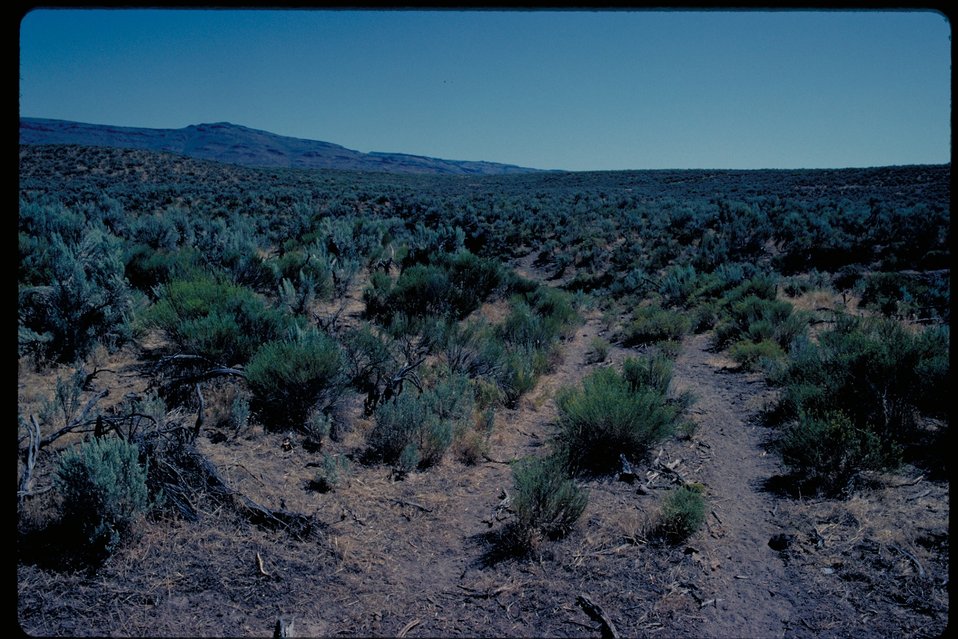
Kelton Road east of Bennett Creek Oregon Trail Lower Snake River District